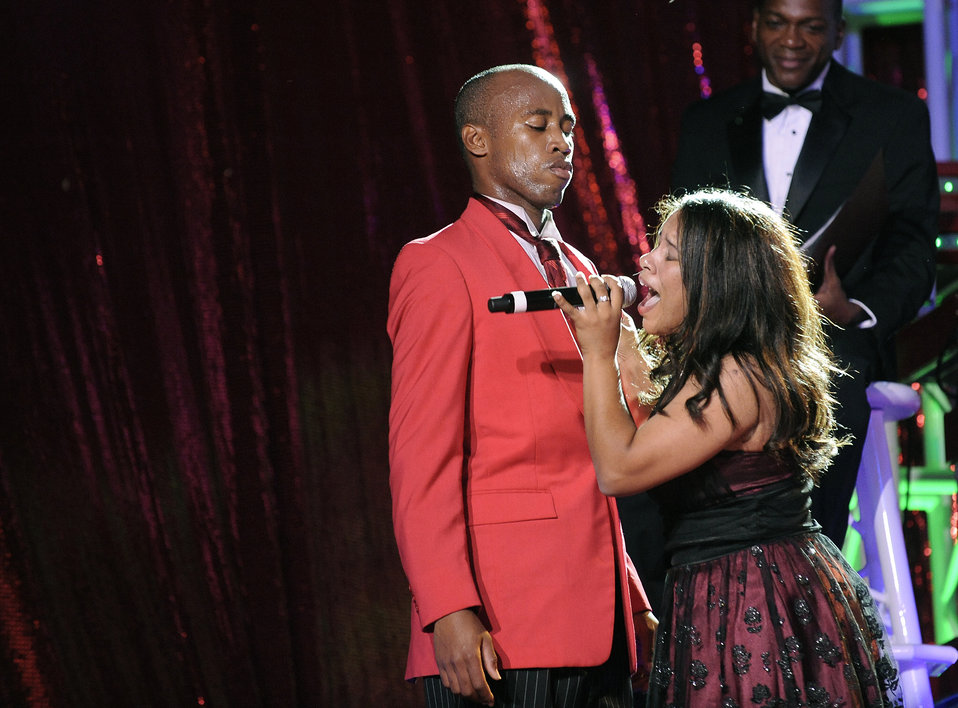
Air Force Week-Sacramento

Tops In Blue Entertainer, Airman 1st Class Joanell Jackson, sings the Effie White classic